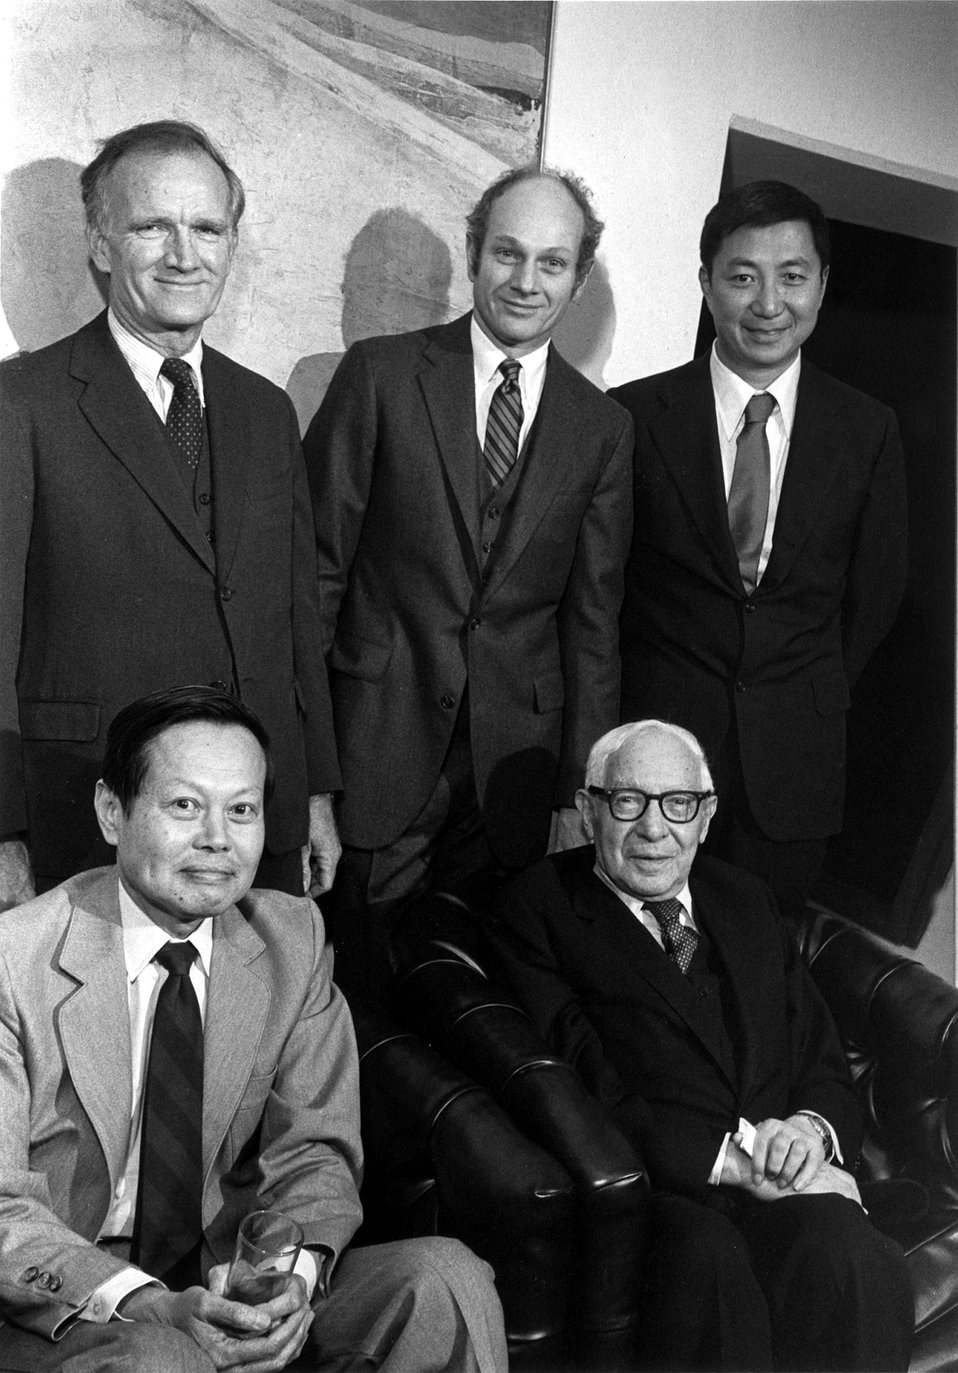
Nobel Prize for Physics, 1976. Samuel C.C. Ting. Standing from left: Val Fitch, James W. Cronin, Samuel Ting. Seated: C.M. Yang and J.J. Rabi.